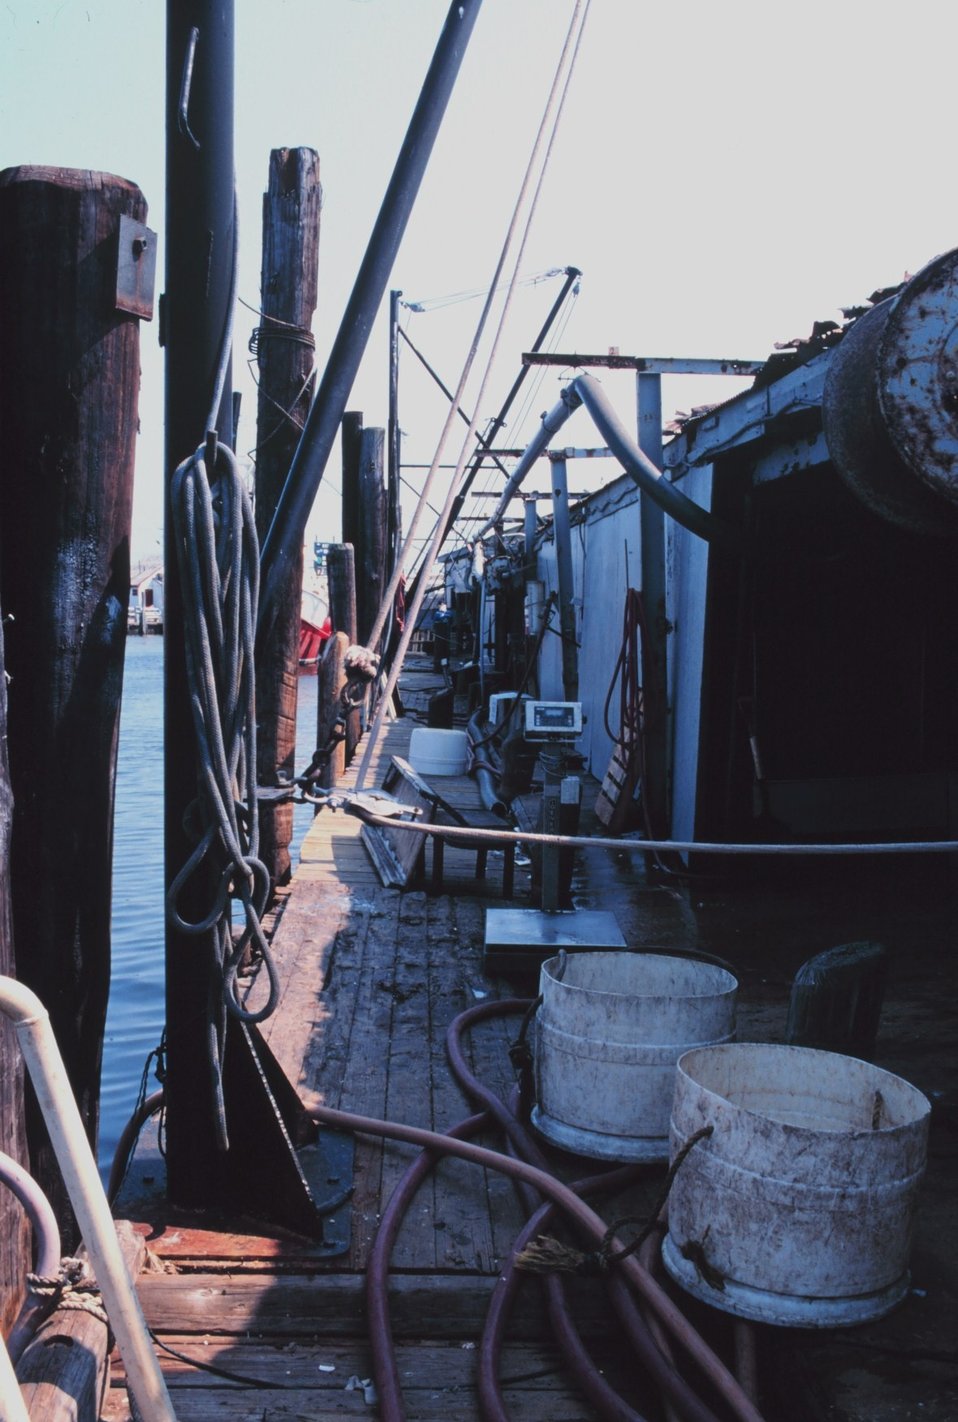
The Co-op Seafood Market and dock